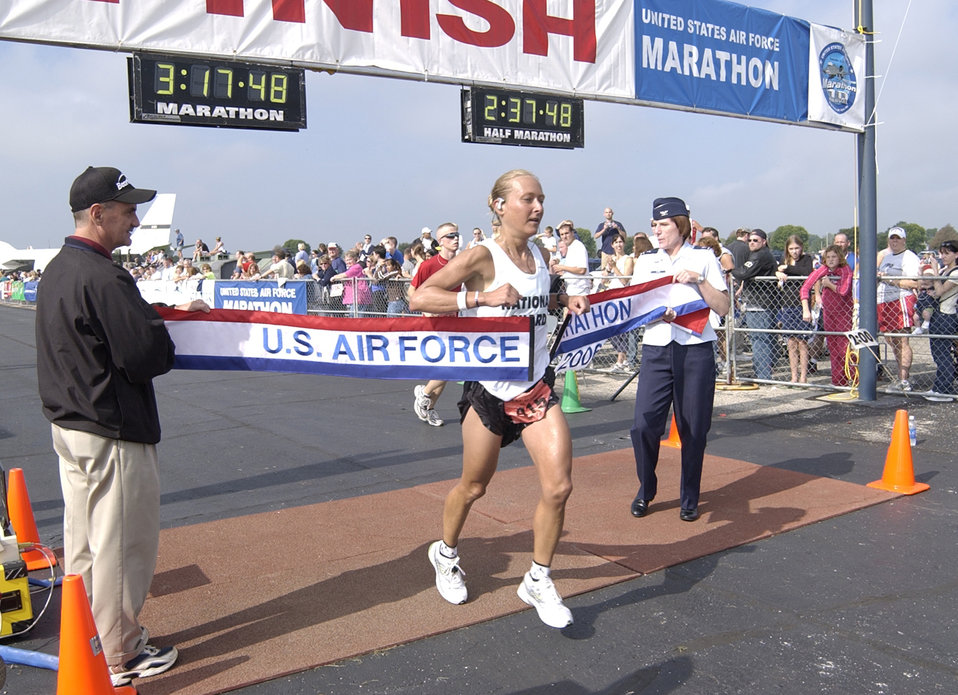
Airman, Soldier take top Air Force marathon races

Michelle Elliott crosses the finish line in the time of 3:17:48 to take first place in the women's division at the 2006 Air Force Marathon at Wright-Patterson Air Force Base, Ohio., on Sept. 16. An Army sergeant, she is from Hasting, Neb.,